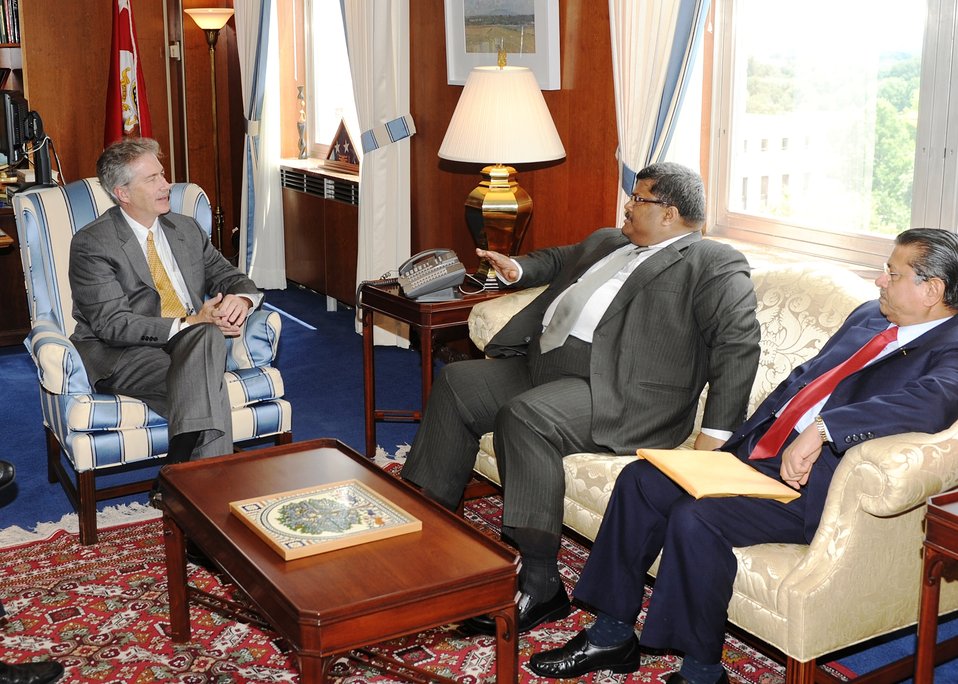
Under Secretary Burns Speaks With Bangladeshi Foreign Secretary Mijarul Quayes

U.S. Under Secretary for Political Affairs William J. Burns speaks with Bangladeshi Foreign Secretary Mijarul Quayes at the U.S. Department of State in Washington, D.C., on June 29, 2010.